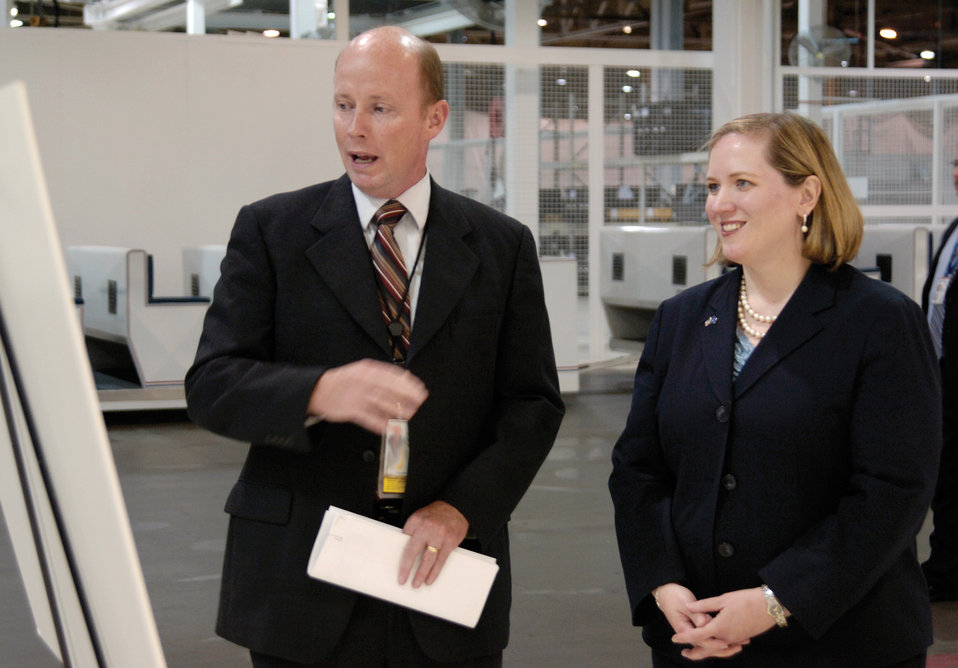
Air Force leaders at Tinker

Darrel Anderson briefs Undersecretary of the Air Force Erin C. Conaton June 6, 2011, on the capabilities of the Tinker Aerospace Complex at Tinker Air Force Base, Okla. Mr. Anderson is the 76th Maintenance Support Group's Tinker Aerospace Complex program manager.